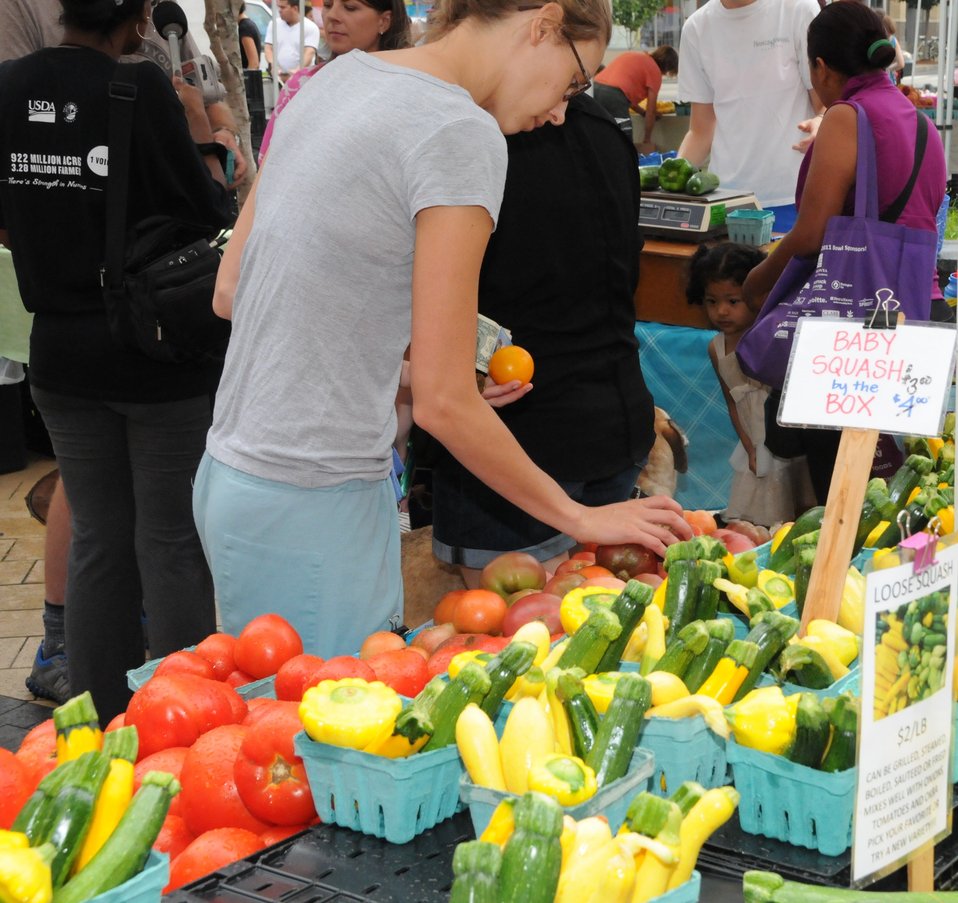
Searching for Baby Squash

Shoppers select produce at the Columbia Heights Community Marketplace.